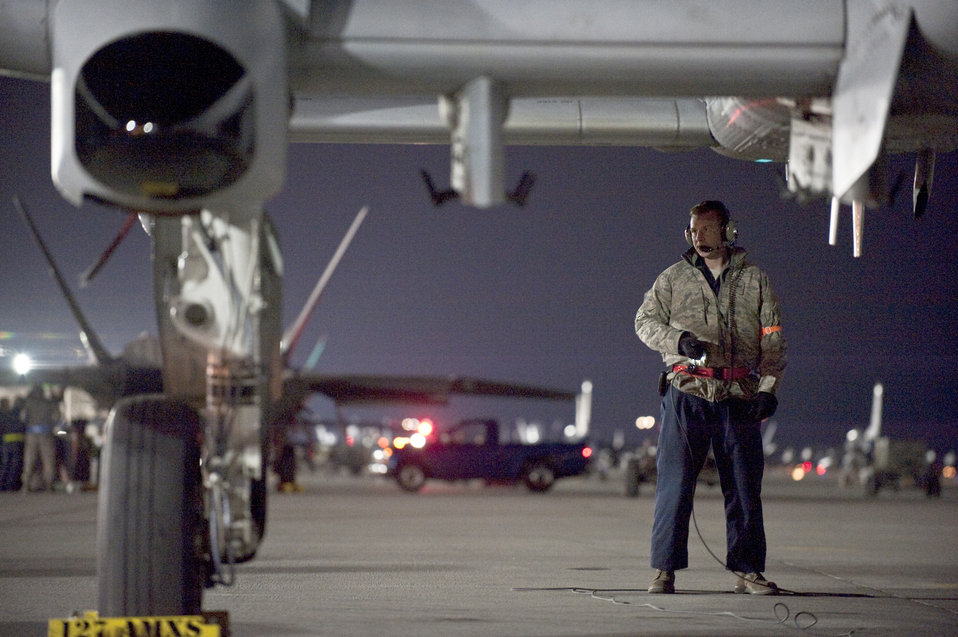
Red Flag 11-3

Senior Airman Joseph Masters conducts preflight checks on an A-10 Thunderbolt II before a training mission Feb. 24, 2011, during exercise Red Flag at Nellis Air Force Base, Nev. Airman Masters is a crew chief assigned to the Michigan Air National Guard?s 127th Aircraft Maintenance Squadron.